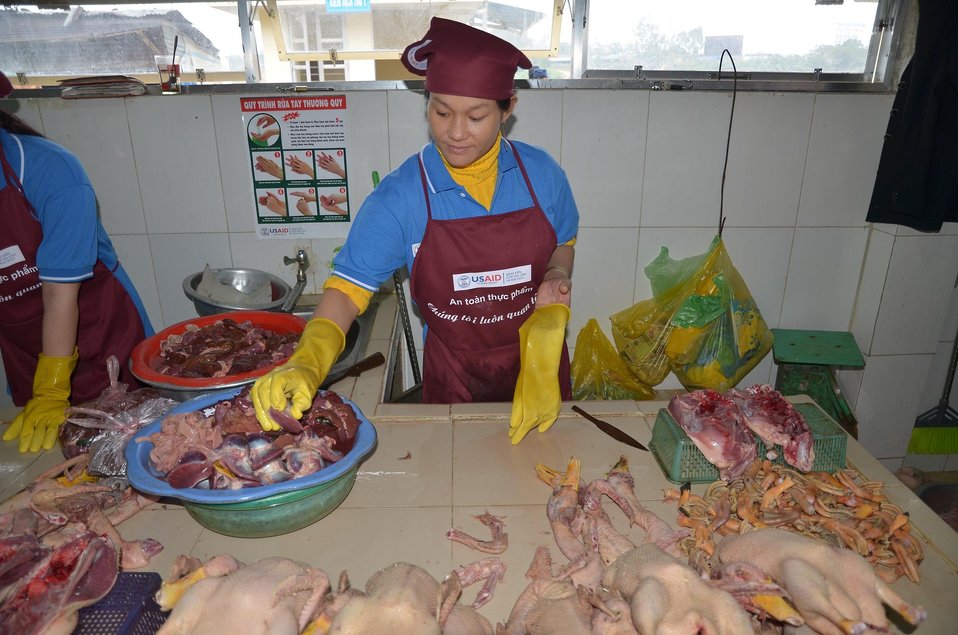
Disease Risk Reduction in Dong Ha Poultry Market, Quang Tri

Photo by Jens Peter Dalsgaard/USAID's Avian and Pandemic Influenza Initiative project team; December 5, 2011